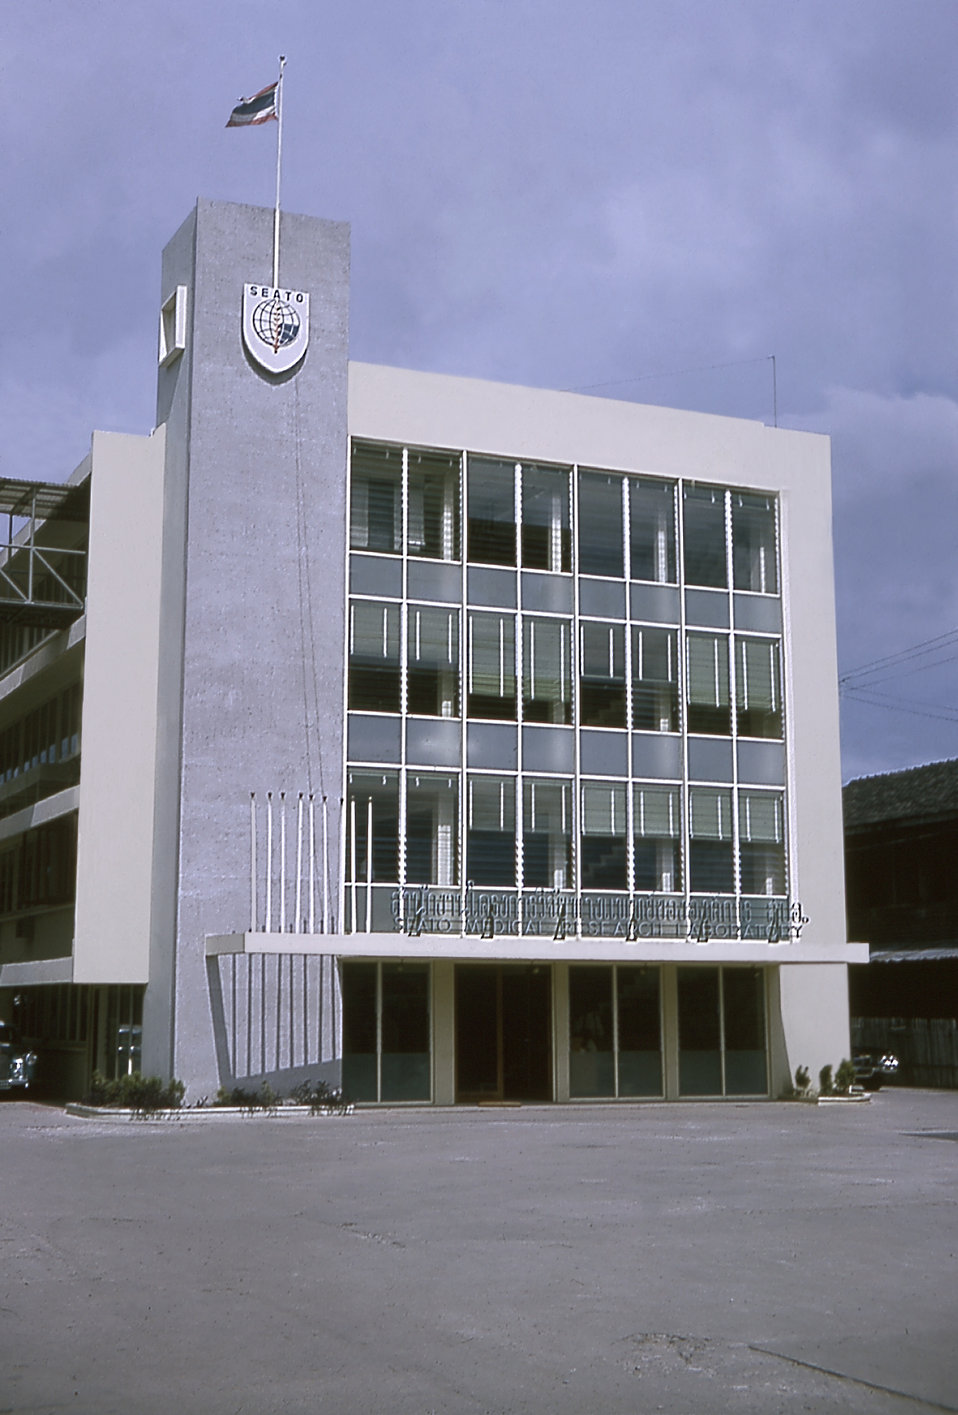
This is the South East Asia Treaty Organization Medical Research Laboratory in Bangkok, Thailand as it appeared in 1964.